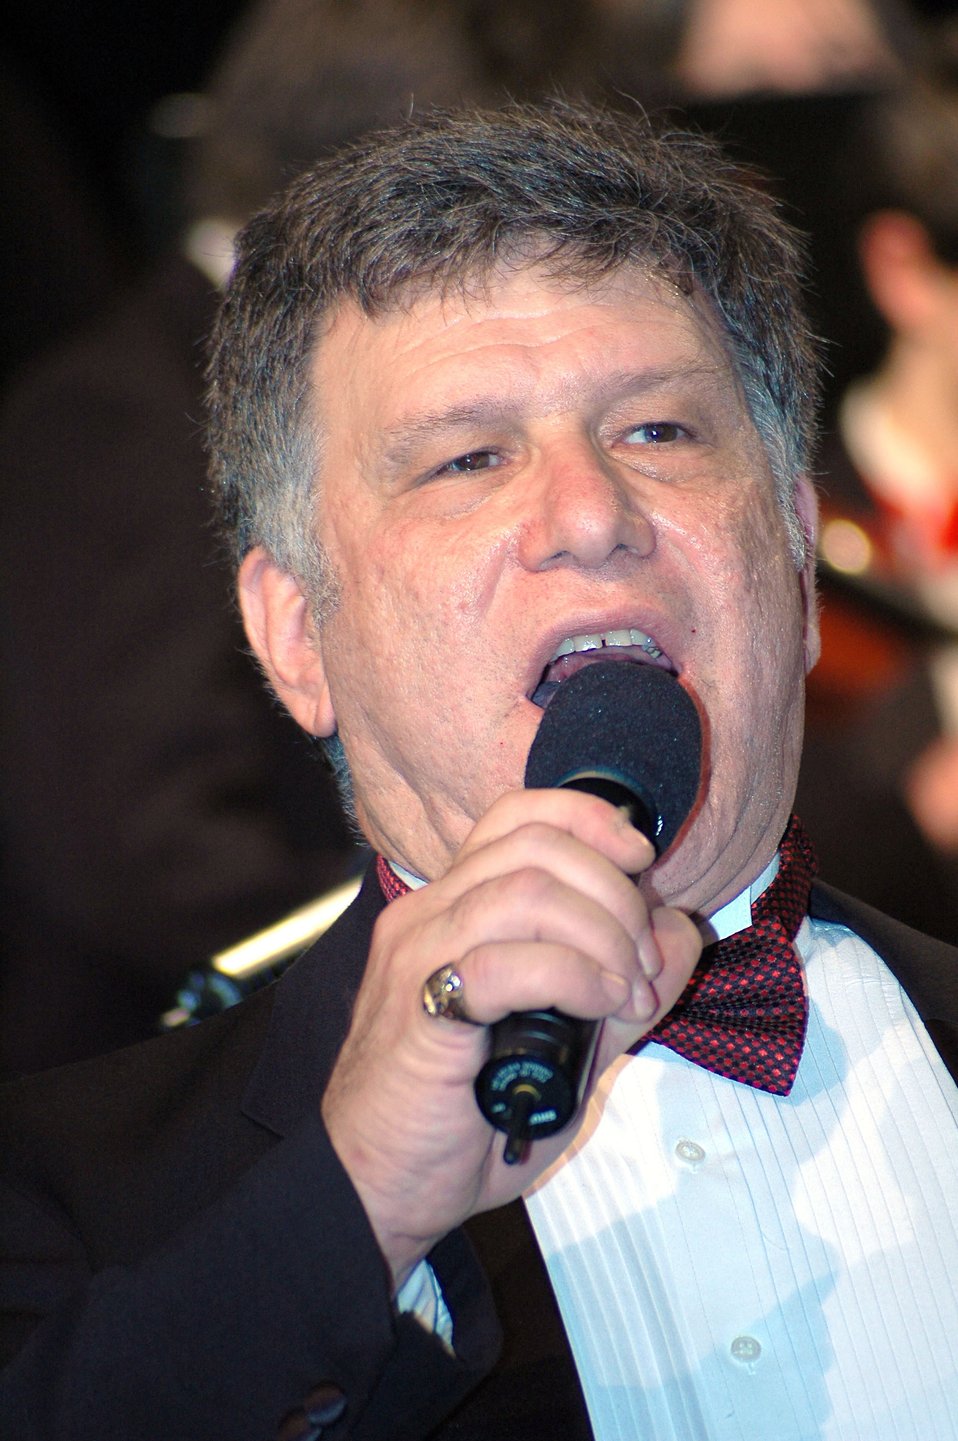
Tribute to the troops

WASHINGTON (AFPN) -- Steve Arnold, M.D., sings